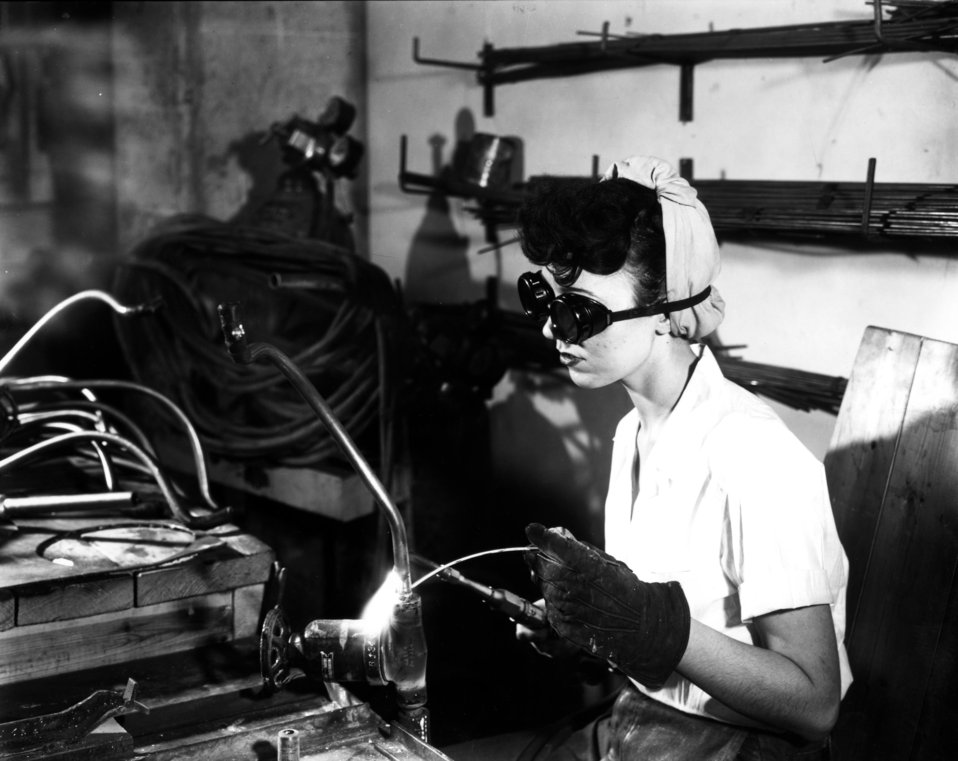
K-25 at Oak Ridge